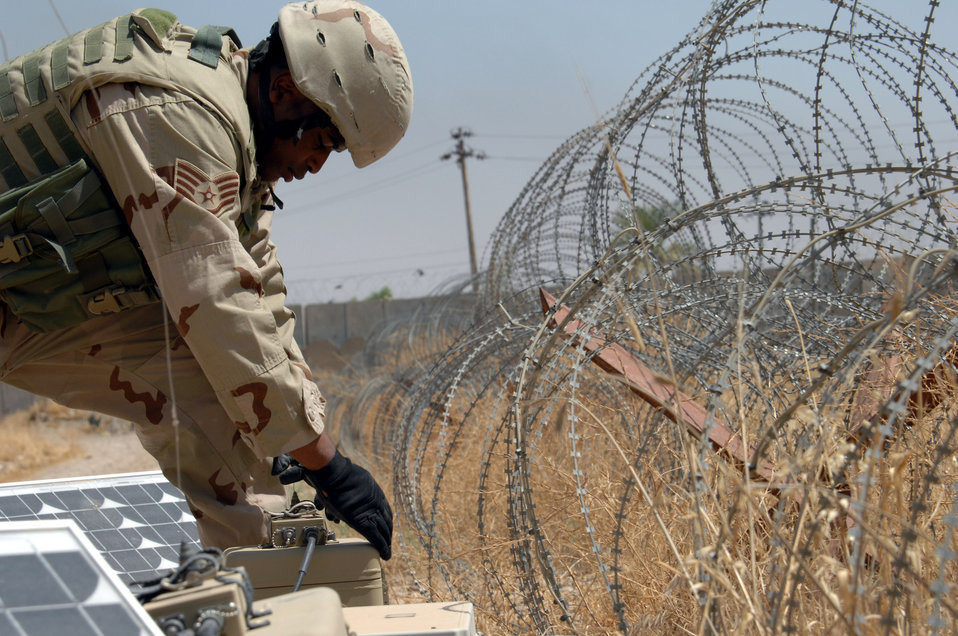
Solar system

Staff Sgt. Anthony Chambers checks a solar-powered security system May 30 at Kirkuk Air Base, Iraq. Sergeant Chambers is deployed to the 506th Expeditionary Security Forces Squadron.